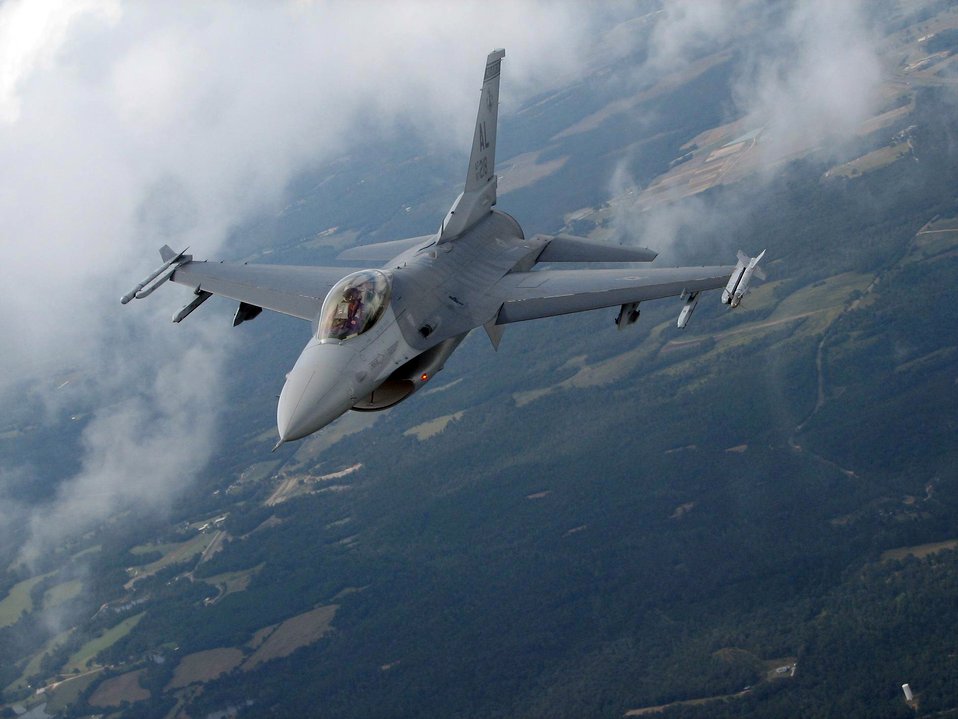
Military appreciation

AUBURN, Ala. -- An F-16 Fighting Falcon flown by Capt. Tom Isenberg maneuvers into position prior to perform a fly-over in support of Auburn University's military appreciation day here Sept. 24 and the Air Force anniversary. Captain Isenberg is from the Alabama Air National Guard's 187th Fighter Wing in Montgomery, Ala.